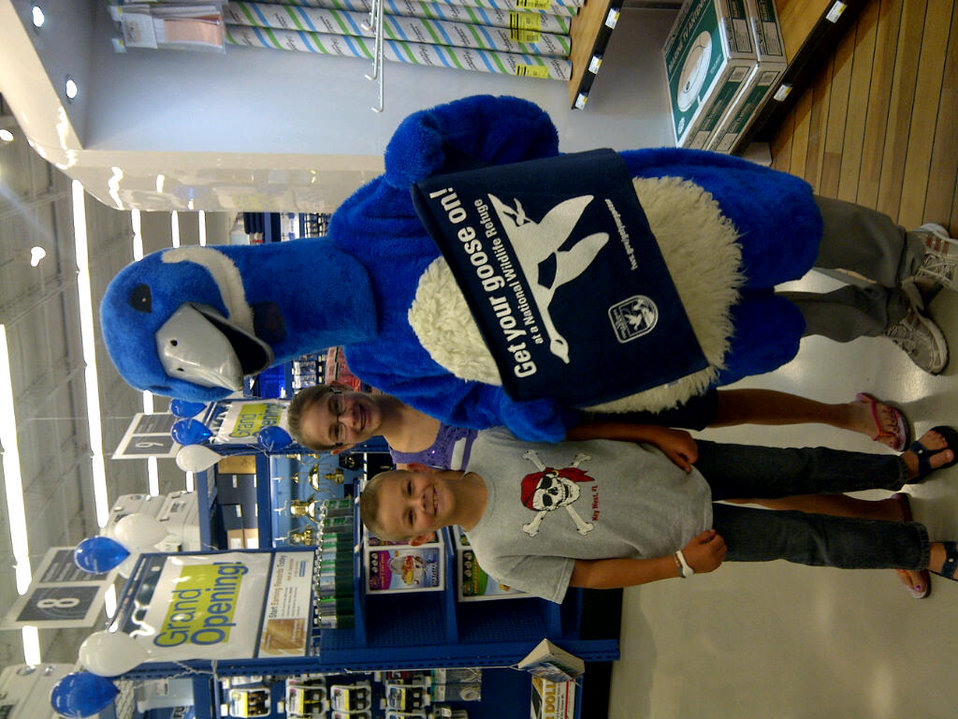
Get Your Goose On!